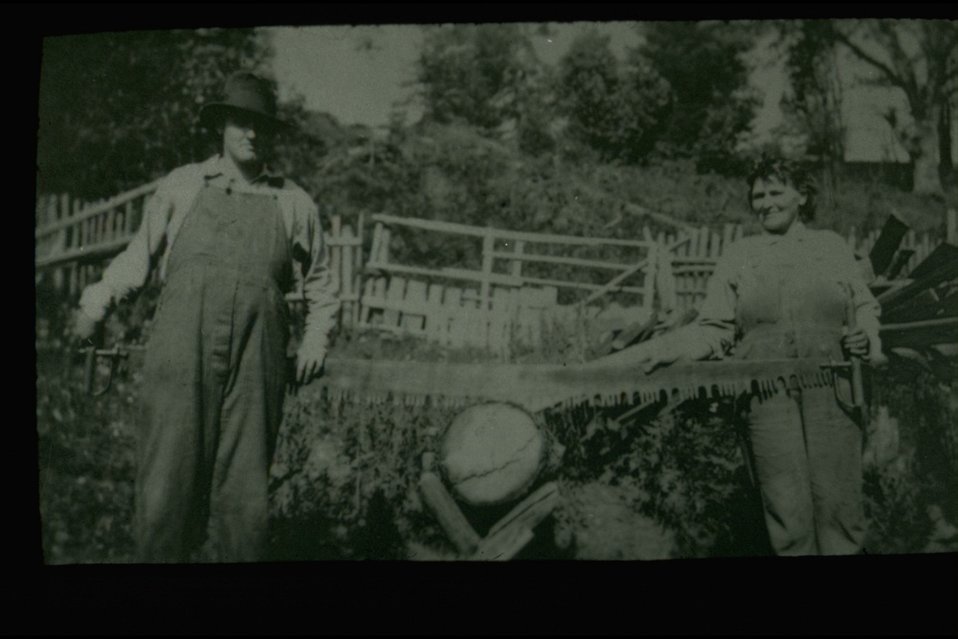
Rogue River - Cross cut saw.